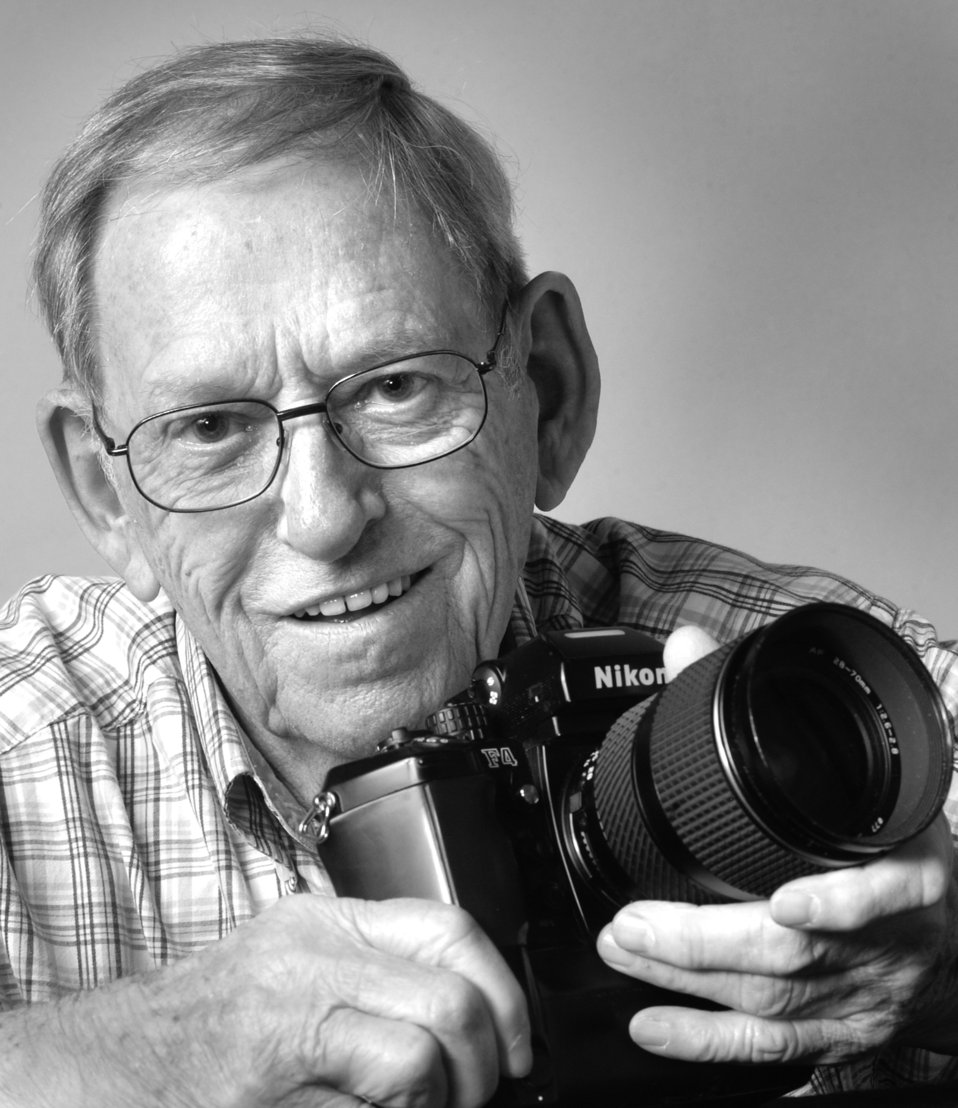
Ed Westcott Oak Ridge

DOE photo by Lynn Freeny

Ed Westcott Oak Ridge Tennessee 2005